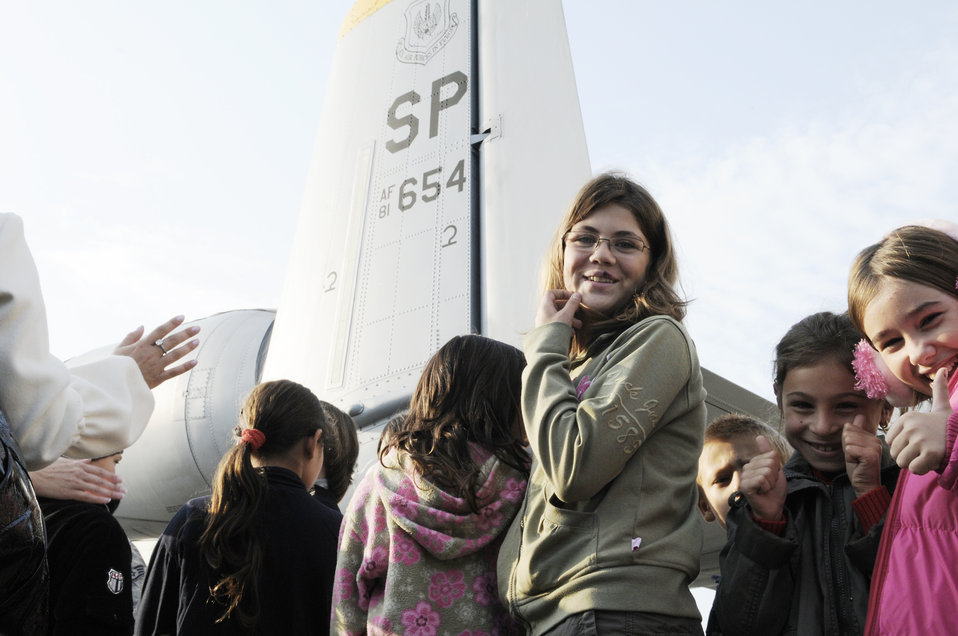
Spangdahlem Airmen reach out to Romanian community

Children from the town of Turda, Romania, smile in front of a static display of an A-10 Thunderbolt II while visiting the 71st Air Base Wing Oct. 26, 2009, at Camp Turzii, Romania. Members of Spangdalem Air Base, Germany deployed in support of Operation Dacian Thunder 2009 explained the parts of the A-10 and let them operate the hose of a fire truck during their visit.